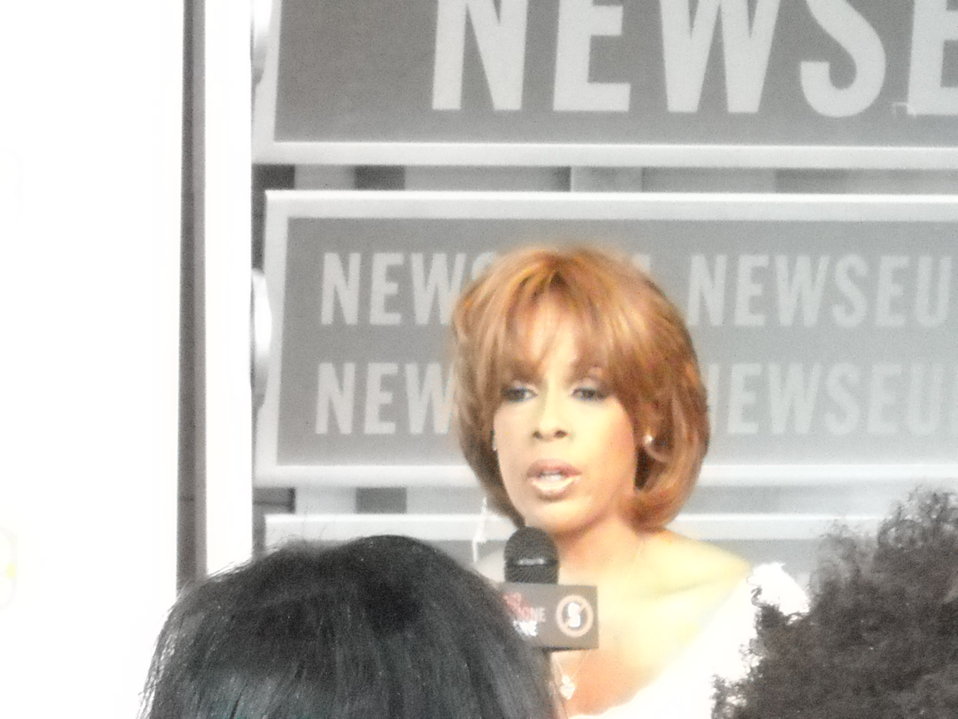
National No Phone Zone Day Newsum Washington, DC April 30, 2010 007